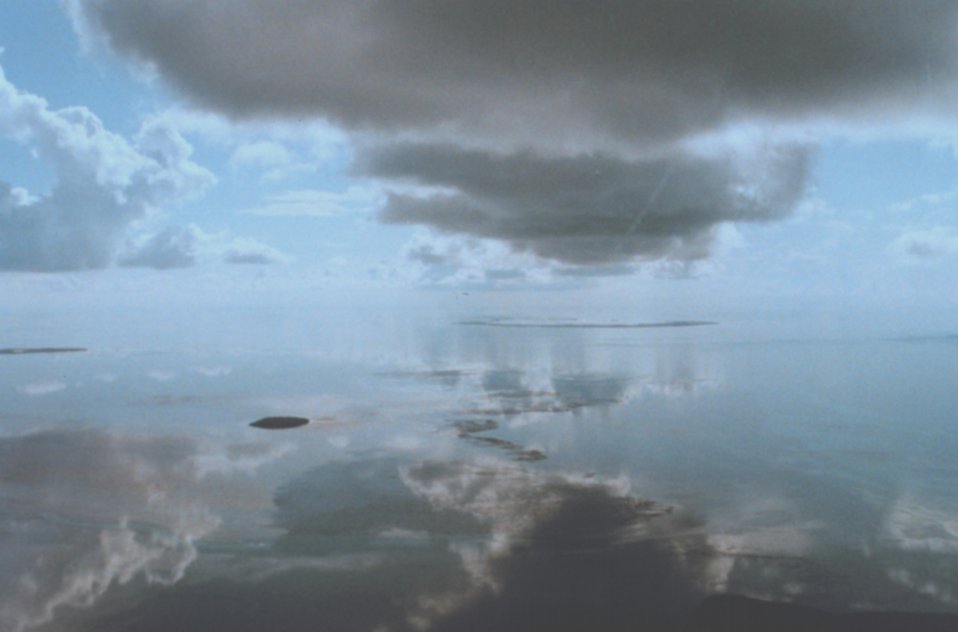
Sea and atmosphere merge into one as reflection obscure the horizon on a still Florida Keys morning.